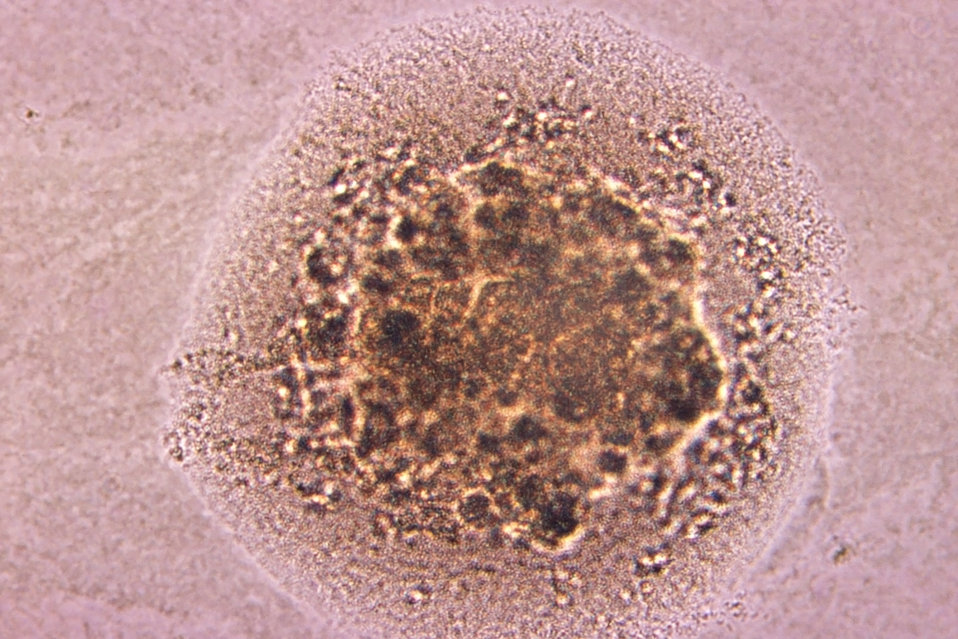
Magnified 380X, this image depicts the morphologic characteristics displayed by a single Gram-positive, Actinomyces bovis bacterial microcolony, of the strain, A-1109, which was cultivated on an unknown culture medium.